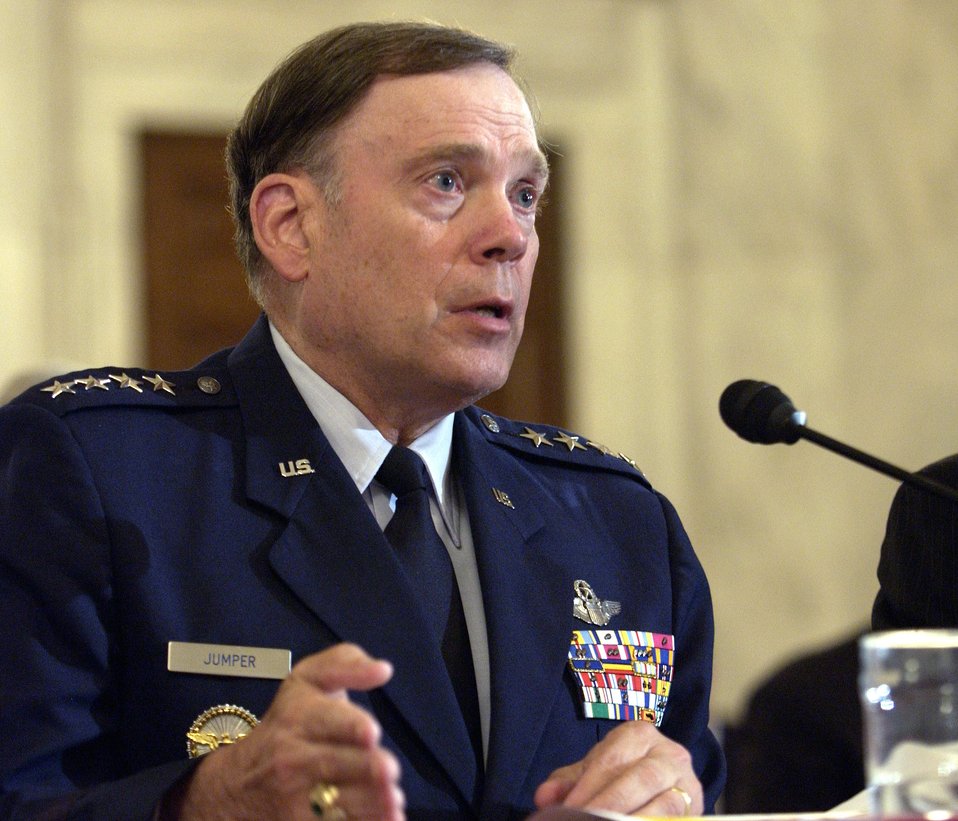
Air Force leaders testify on IG tanker lease report

WASHINGTON -- Air Force Chief of Staff Gen. John P. Jumper answers a question during a hearing of the Senate Armed Services Committee here June 7. The committee held the hearing to examine the Department of Defense inspector general's management accountability review of the Boeing KC-767A Tanker Program.